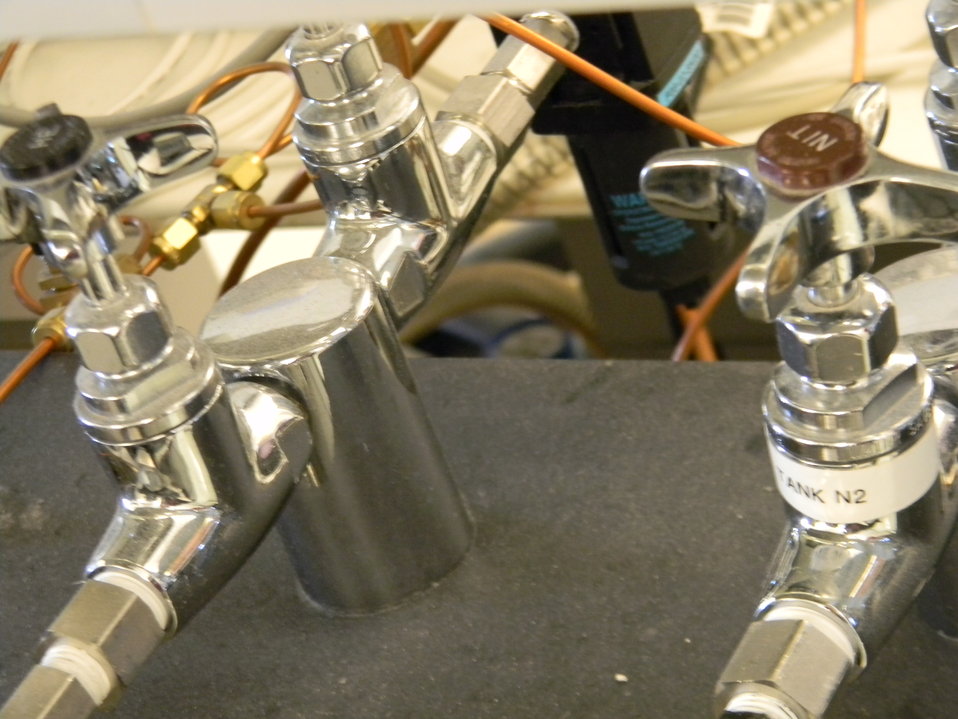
IRP equipment